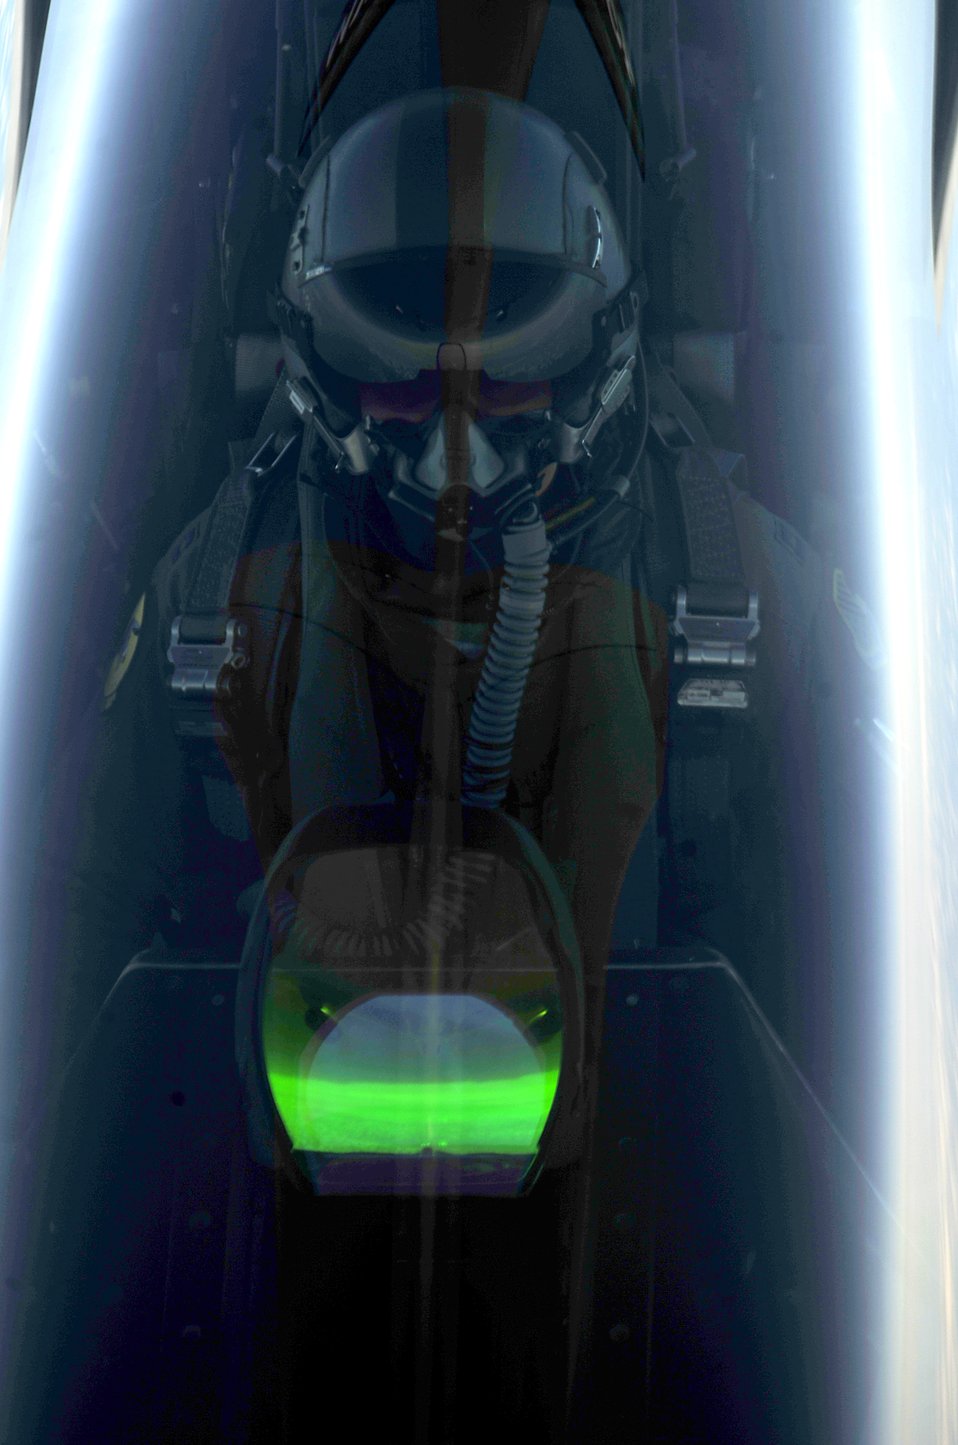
F-22 Raptor

A KC-135 Stratotanker with the 756th Air Refueling Squadron, Joint Base Andrews Naval Air Facility, Md. refuels a 1st Fighter Wing's F-22 Raptor from Joint Base Langley-Eustis, Va. off the east coast on May 10, 2012. The first Raptor assigned to the Wing arrived Jan. 7, 2005. This aircraft was allocated as a trainer, and was docked in a hanger for maintenance personnel to familiarize themselves with its complex systems. The second Raptor, designated for flying operations, arrived Jan. 18, 2005. On Dec. 15, 2005, Air Combat Command commander, along with the 1 FW commander, announced the 27th Fighter Squadron as fully operational capable to fly, fight and win with the F-22. (U.S. Air Force Photo by: Master Sgt. Jeremy Lock)